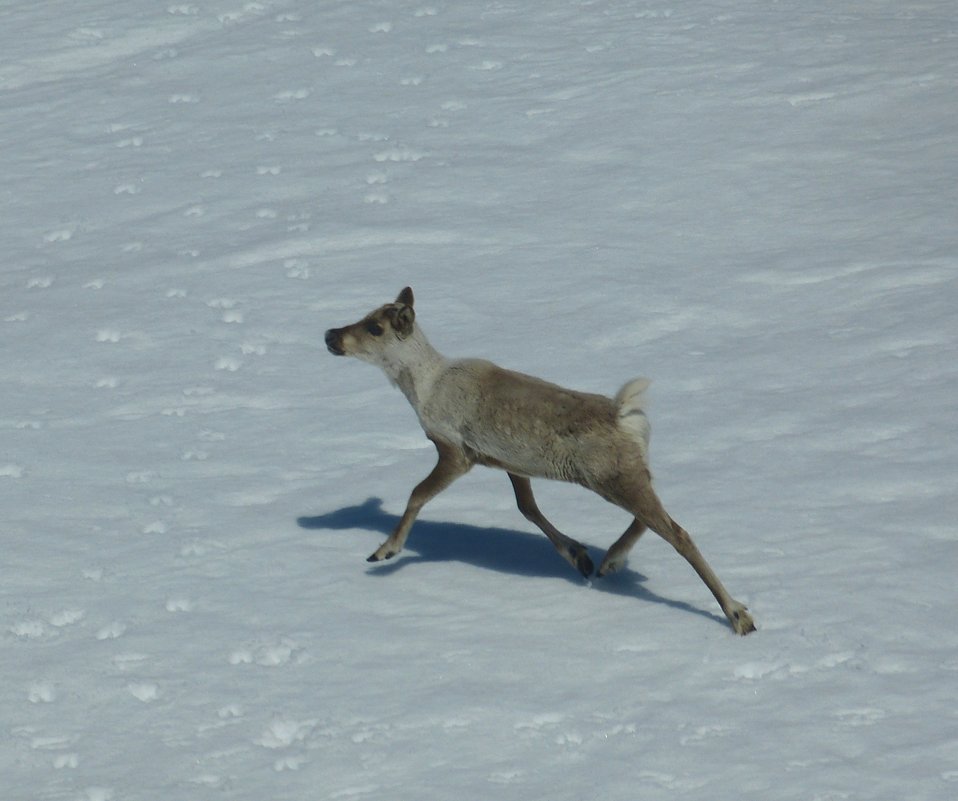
Caribou in Kilbuck Mountains on Yukon Delta National Wildlife Refuge

Photo credit: Kristine Sowl
USFWS, Yukon Delta National Wildlife Refuge